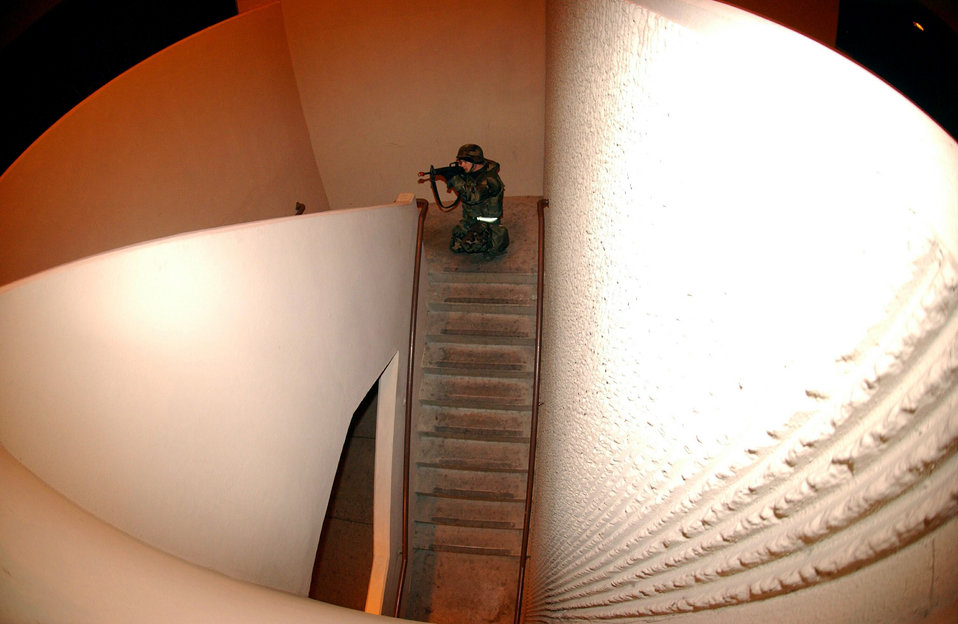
Ready for a fight

OSAN AIR BASE, South Korea -- Staff Sgt. Tim Westerland uses tactical maneuvers to conduct a sweep of the grounds at the base hospital after a simulated fire fight here recently during Exercise Beverly Midnight. The Airman is assigned to the 51st Security Forces Squadron.